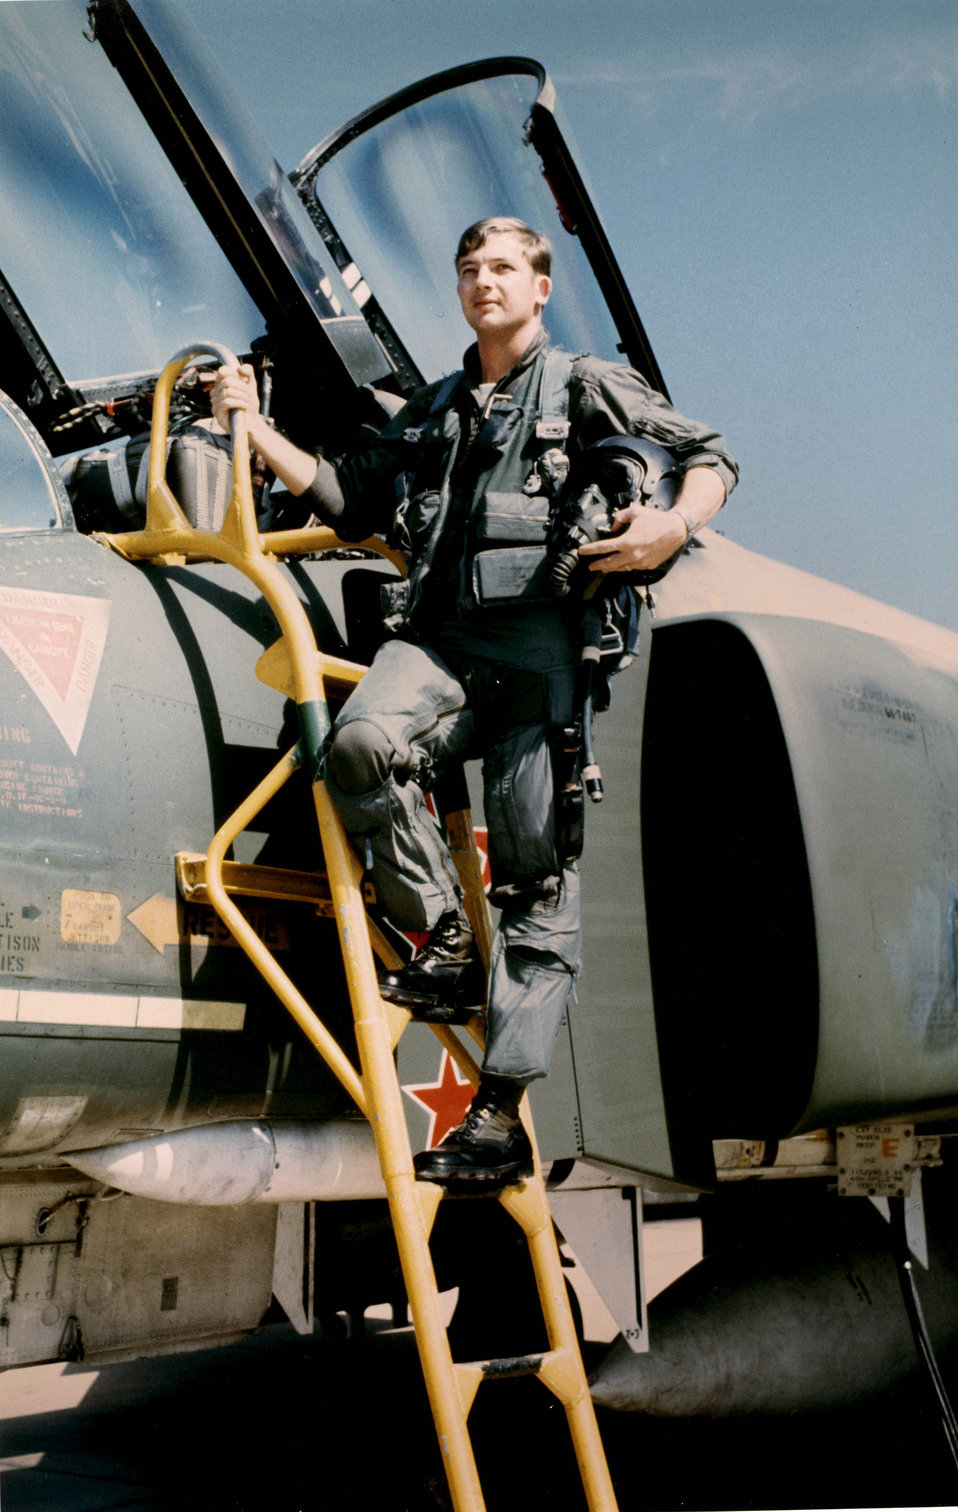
Charles B. DeBellevue

1960's -- Capt. Charles B. DeBellevue, Vietnam Ace F-4D Phantom at Udorn AB, Thailand. As a captain, DeBellevue became the first non-pilot ace and the leading ace in the U.S. Air Force during the Vietnam War. He was an F-4 weapon system officer with the 555th Tactical Fighter Squadron.